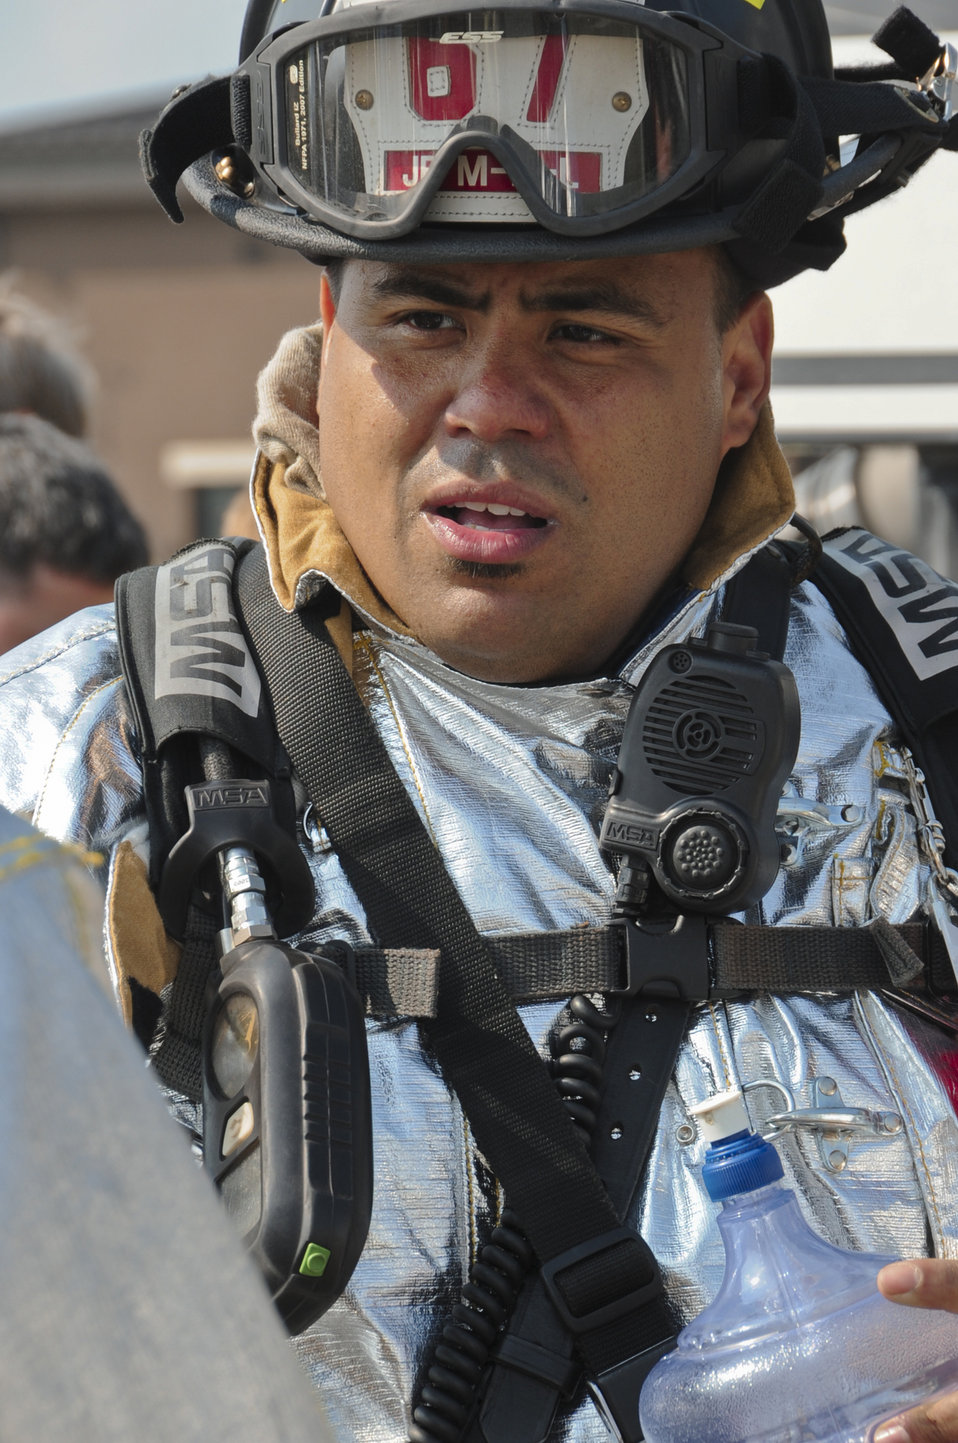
Firefighter training

Ismael Alicea takes a drink of water June 10, 2011, before fighting fires on a mock aircraft during a joint firefighting course Joint Base McGuire-Dix-Lakehurst, N.J